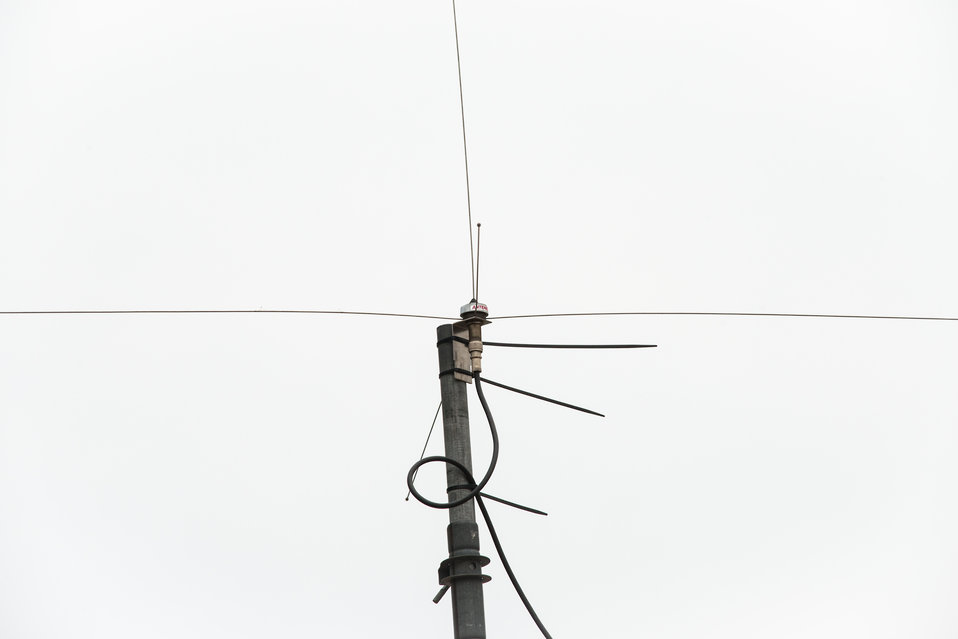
Communications antenna from the National Interagency Fire Center's National Interagency Incident Communications Division, in Boise, ID, in use at the Big Windy Complex Wildlands Fire, Incident Command Post (ICP) in Merlin, OR on Friday, Aug 9, 2013. The fire center is approximately 15 miles west of Interstate-5 and East Northeast of Galice, Oregon.